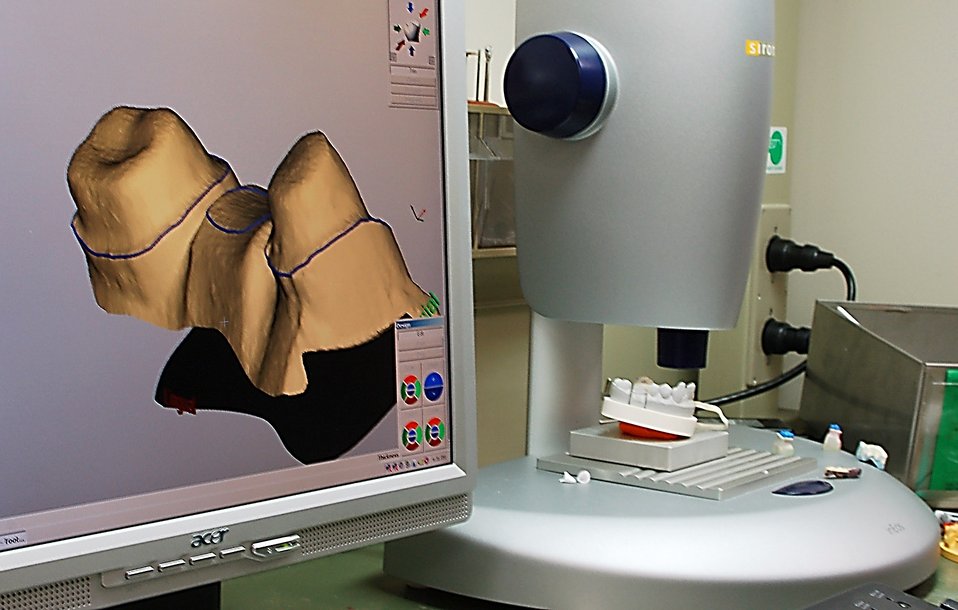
New technology takes pain out of major dentistry

A camera scans a casting or mold and sends an extremely high-resolution, three-dimensional image to the modeling computer Jan. 26 at Moody Air Force Base, Ga. The item needed is then created in a virtual environment and either transmitted to the Area Dental Lab, or created in-house on a precision milling machine. The $64,000 computerized milling system shortens the processing time to create crowns and bridges from six weeks to a couple of hours.